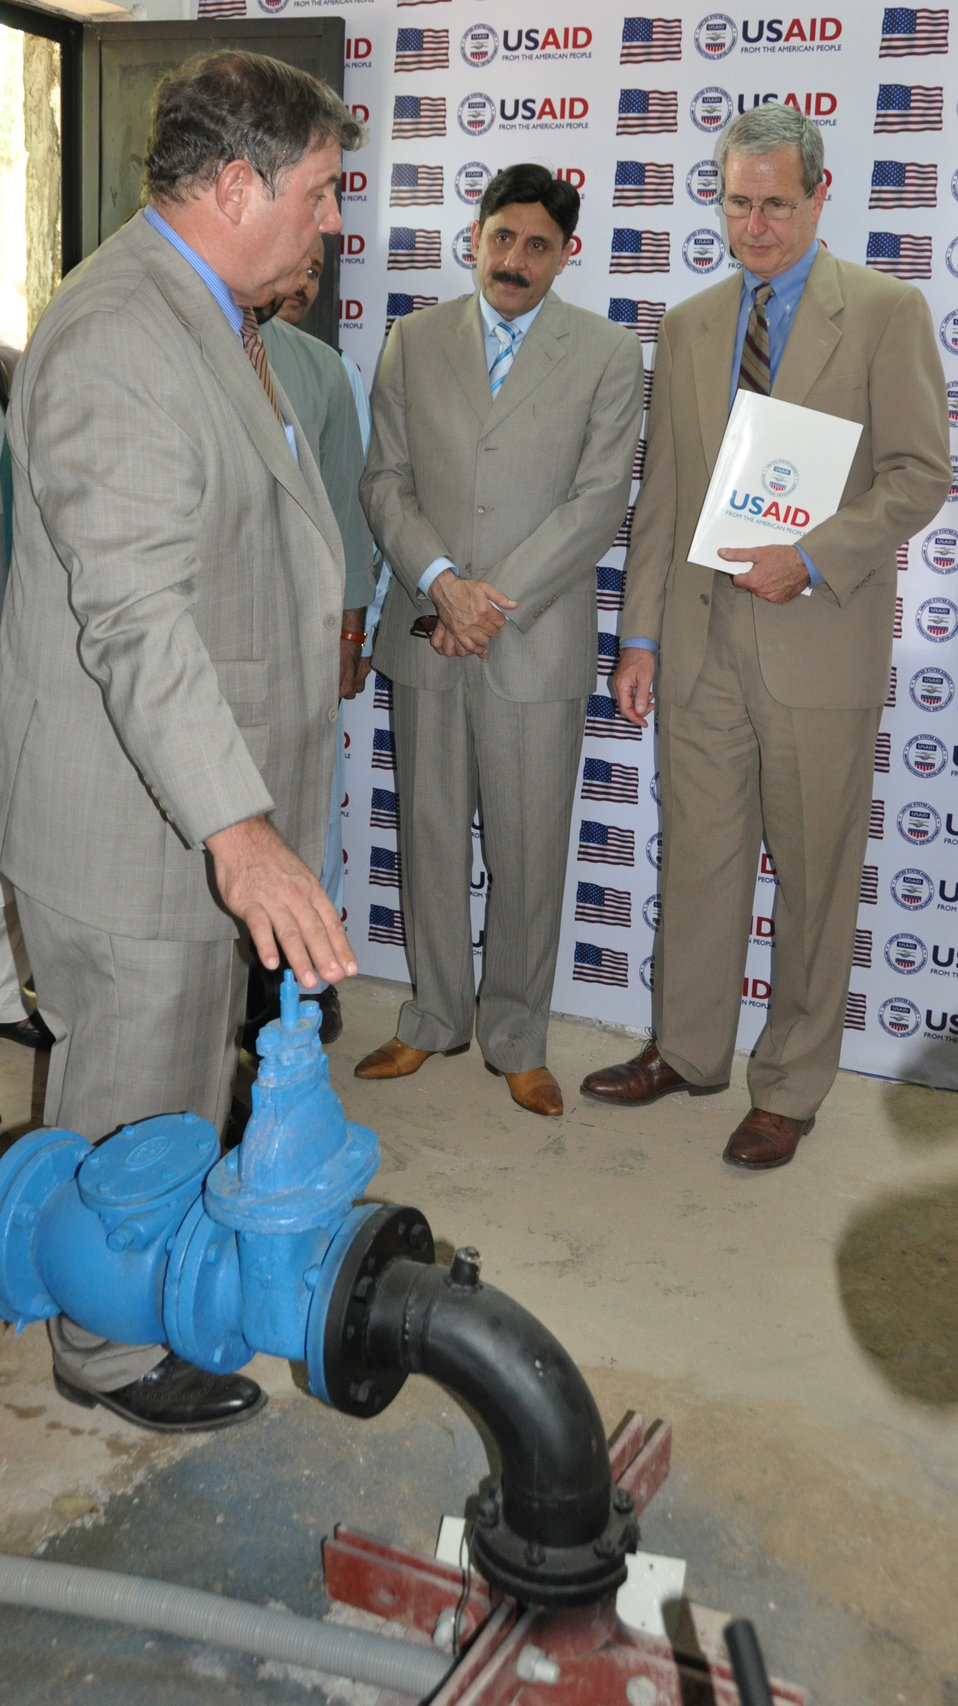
USAID funds replacement of 187 CDA Tubewell Pumps

Islamabad, July 17, 2012 - USAID Country Director Jonathan M. Conly and CDA Chairman Farkhand discussing a new tubewell pump installed by USAID at Fatima Jinnah Park. USAID will replace all 187 tubewell pumps owned by the Capital Development Authority (CDA) in order to improve water supply for Islamabad, reduce energy consumption, and decrease the electricity bills for CDA.